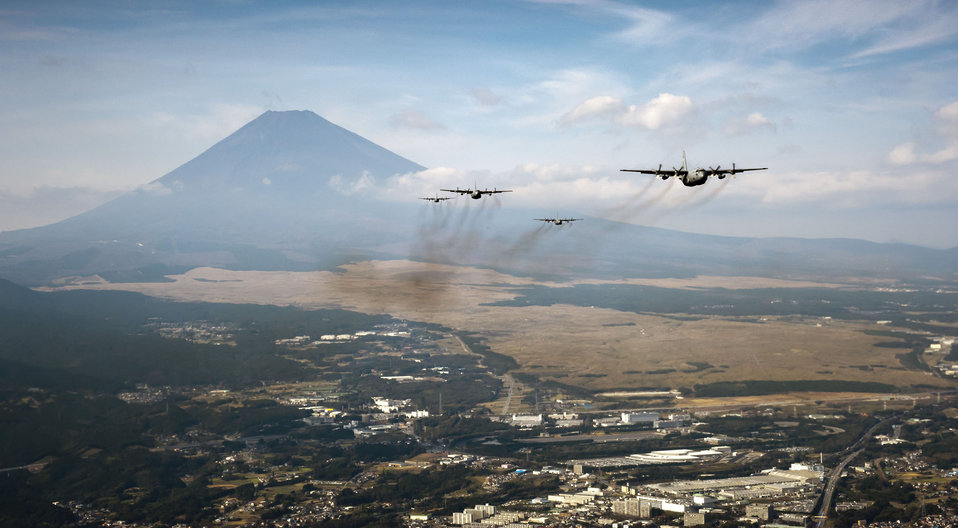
No mountain's too high

A formation of C-130 Hercules cargo aircraft fly in formation as they return to Yokota Air Base, Japan, from a training mission near Mt. Fuji, Japan, Nov. 2, 2011. Aircrew from the 36th Airlift Squadron participated in Samurai Surge, an all-day training exercise testing mission capability of many agencies throughout the Yokota AB.